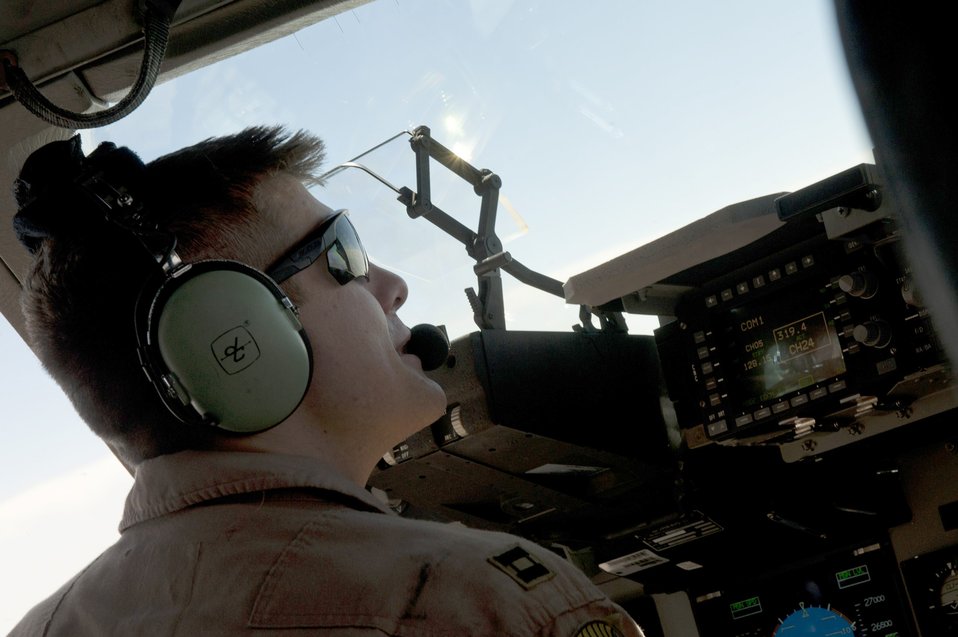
Air delivery cargo drop

Capt. Ryan Fandell flies a C-17 Globemaster III Mar. 3, 2011, over Afghanistan, during an air delivery mission to remote operating bases in the region. Captain Fandell is assigned to the 816th Expeditionary Airlift Squadron.